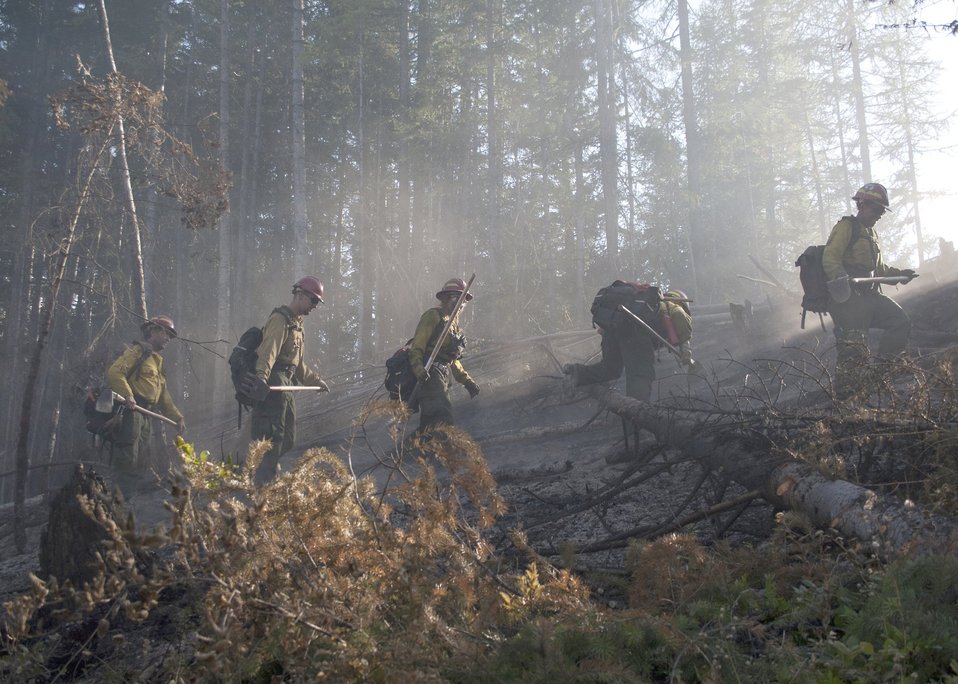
Firefighters supported by three fire engines, two helicopters, two water tenders, a dozer and an air tanker battled to contain the 90 acre Rogers Fire located on Mt. Rogers five miles west of Aladdin, WA on the Colville National Forest. Firefighters worked under adverse conditions with steep terrain and gusting winds to reduce the loss of timber and protect the Rogers Mountain Trail. The Rogers Fire began on Aug. 9, 2011 and was controlled by Aug. 19, 2011 with mop up crews ensuring that no flare-ups occurred. Colville National Forest has 1.1 million acres in northeastern Washington and includes the Kettle River, Selkirk Mountain ranges, and the upper reaches of the Columbia River.